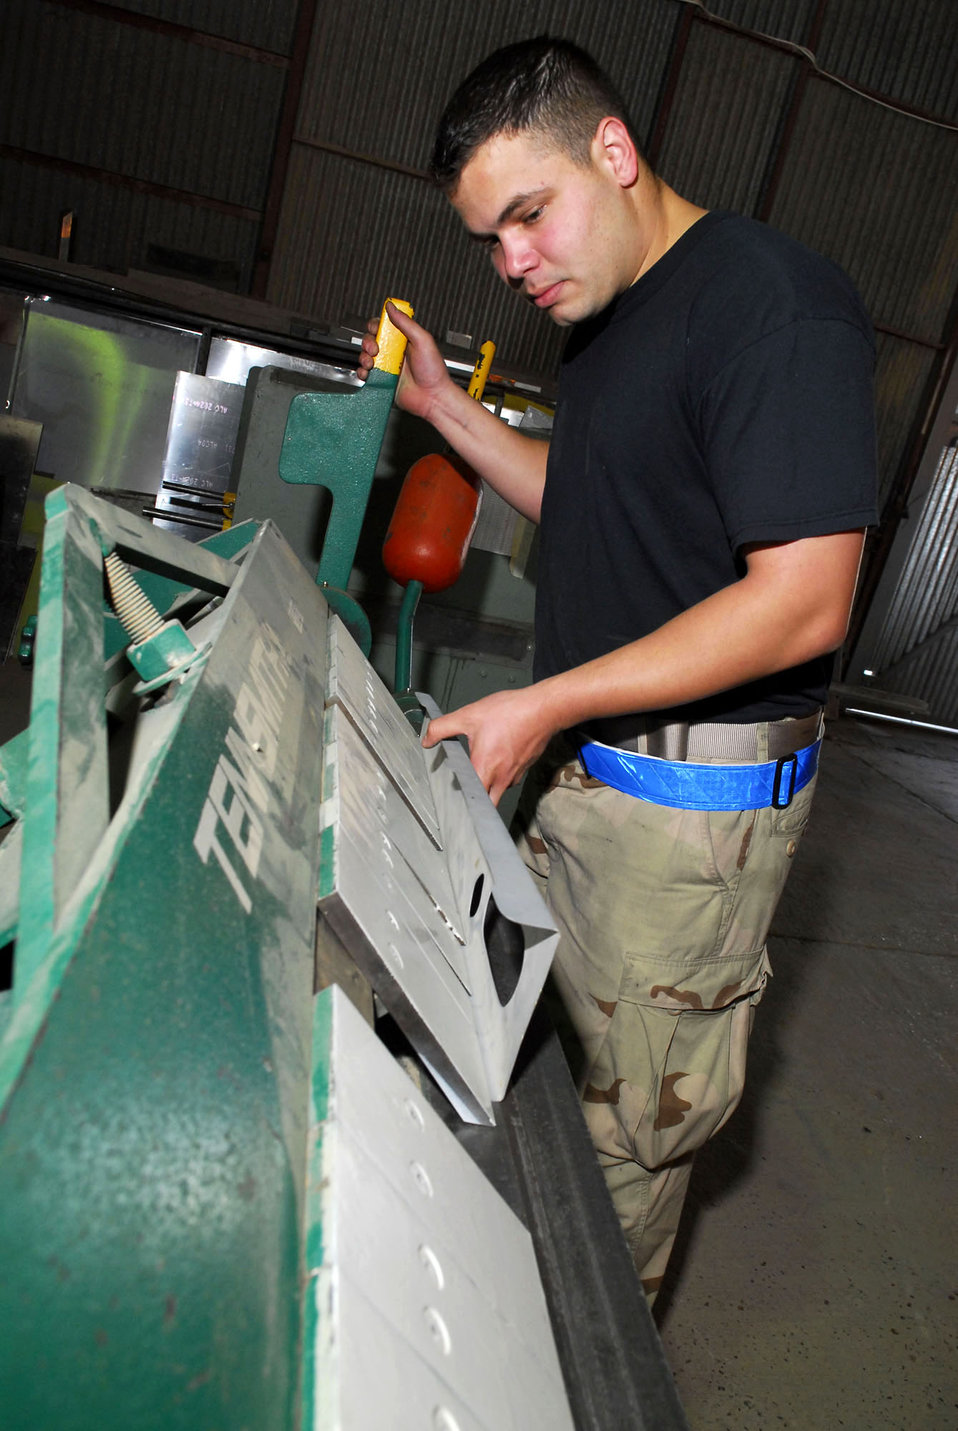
Fabricating the force

Staff Sgt. Adrian Lopez uses a box and pan break to create a strake enclosure rib which will be used on an F-16 Fighting Falcon Nov. 14 at Balad Air Base, Iraq. The box and pan break bends metal at a ninety-degree angle helping the sheet fabrication shop meet the needs of all customers. Sergeant Lopez is a 332nd Expeditionary Maintenance Squadron aircraft structural maintainer and is deployed from Spangdahlem Air Base, Germany.